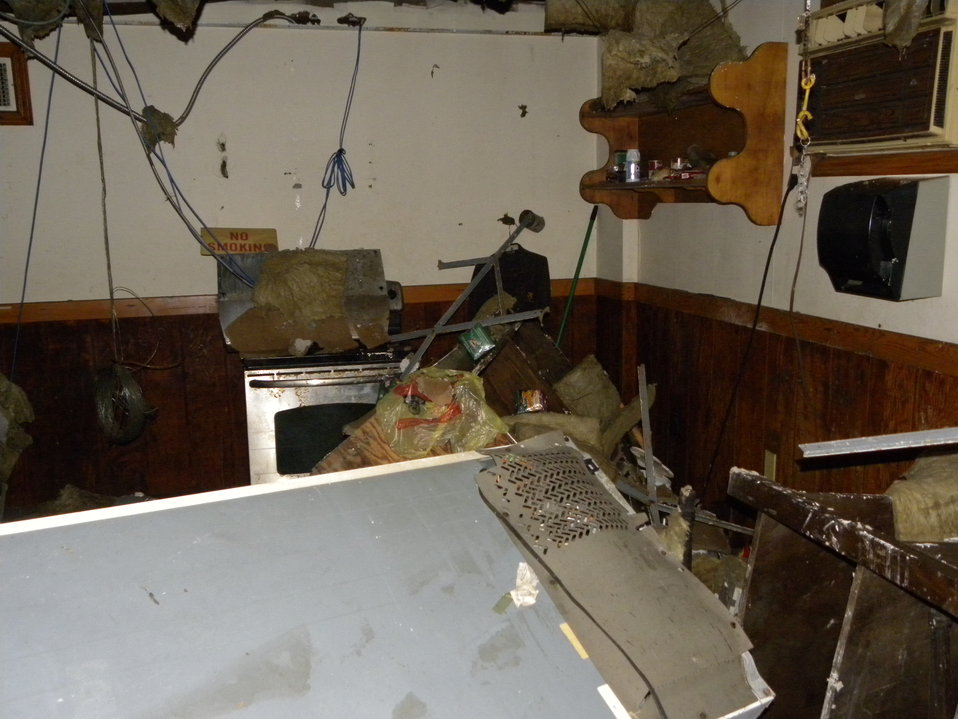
Flooded break room in Newark wastewater treatment plant

A view of a break room at the Passaic Valley Sewerage Commission plant in Newark, N.J., after the plant was inundated by storm surge following Hurricane Sandy, shown Nov. X, 2012. One of the U.S. Army Corps of Engineers’ missions under the federal government’s Sandy response and recovery efforts is helping return critical public infrastructure damaged by the storm to service.